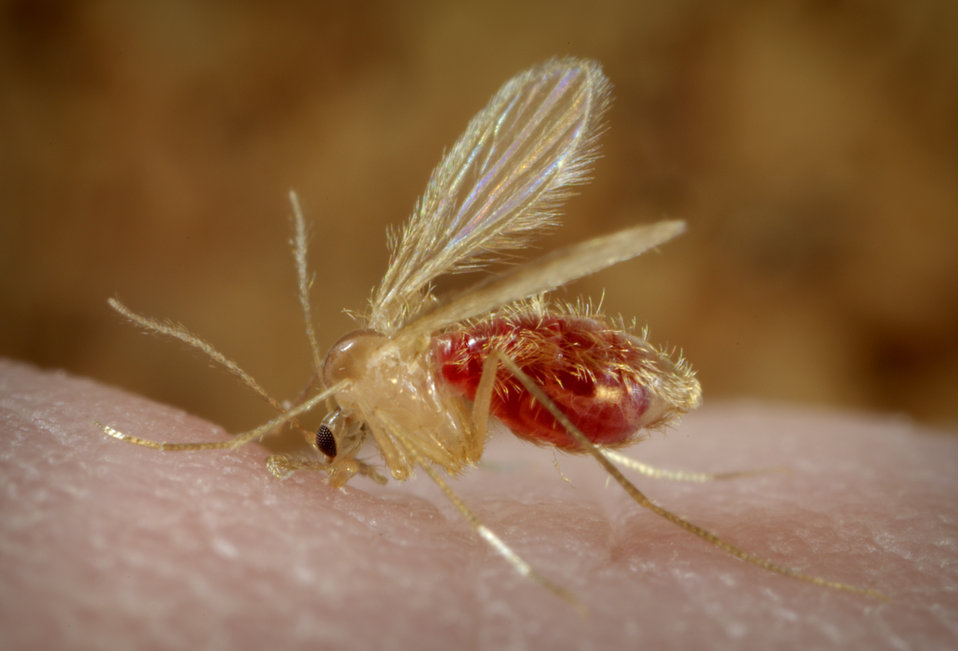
This photograph depicts a Phlebotomus papatasi sand fly, which had landed atop the skin surface of the photographer, who'd volunteered himself as host for this specimen's blood meal. The sand flies are members of the Dipteran family, Psychodidae, and the subfamily Phlebotominae. This specimen was still in the process of ingesting its bloodmeal, which is visible through its distended transparent abdomen. Sand flies such as this P. papatasi, are responsible for the spread of the vector-borne parasitic disease Leishmaniasis, which is caused by the obligate intracellular protozoa of the genus Leishmania.